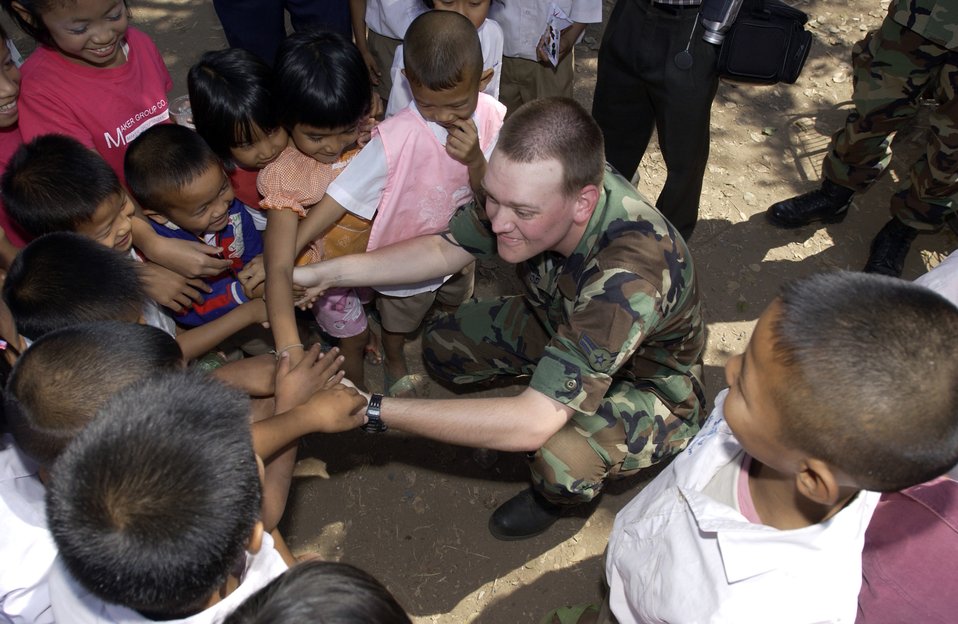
Cope Tiger '06

NAKHON RATCHAISMA, Thailand (AFPN) -- Airman 1st Class Brock Wood shakes hands with elementary school children near Korat Royal Thai Air Base, Thailand, during a break from the Cope Tiger '06 exercise. Airman Wood was part of a group of Airmen who delivered supplies to the Ang Huay Yang Elementary School. He is a computer specialist with the 3rd Communications Squadron at Elmendorf Air Force Base, Alaska.